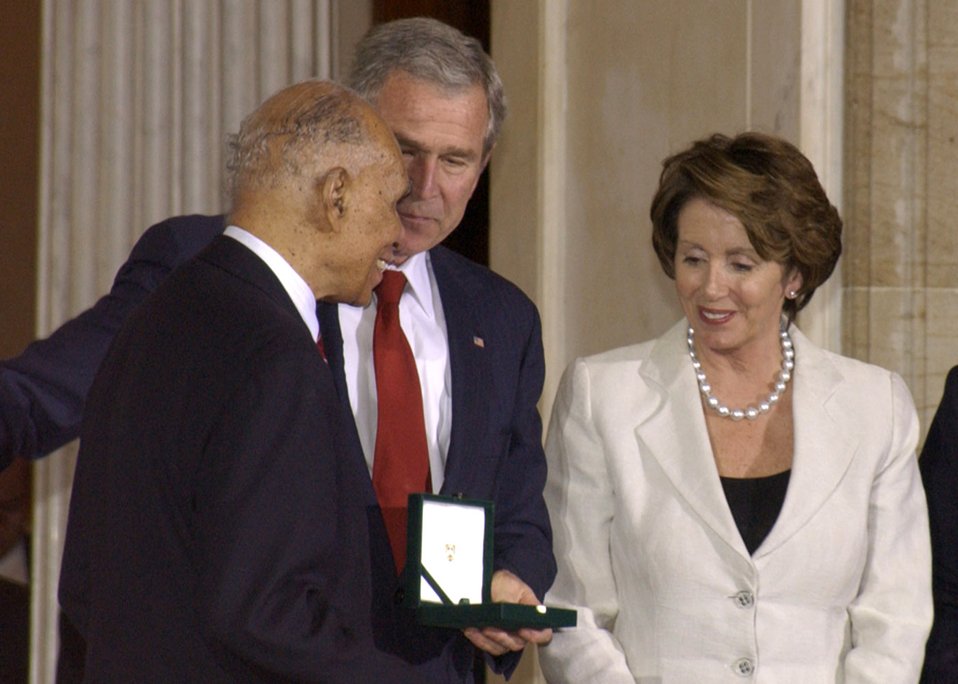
Congress honors Tuskegee Airmen

President Bush and Nancy Pelosi, speaker of the U.S. House of Representatives, present Tuskegee Airman Dr. Roscoe Brown Jr. with the Congressional Gold Medal, Congress' most distinguished award. Dr. Brown, along with five other Tuskegee Airmen, accepted the award on behalf of the more than 300 Airmen in attendance at the ceremony.